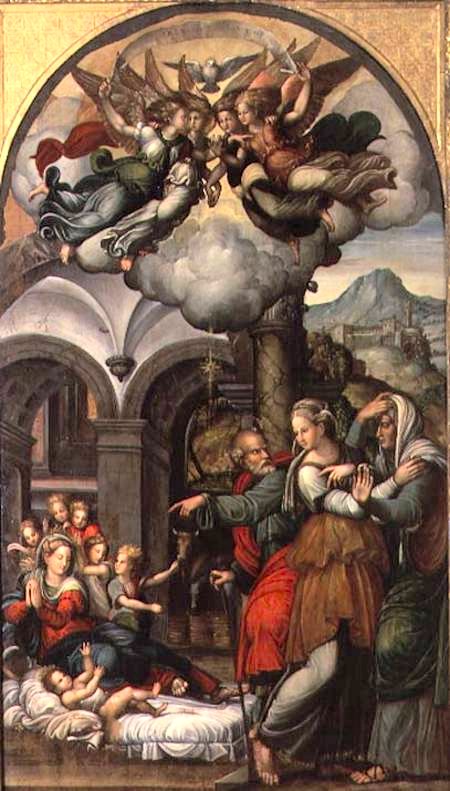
'Nativity with the Two Midwives', oil on canvas painting by Pellegrino Aretusi, Estense Gallery, Modena, Italy